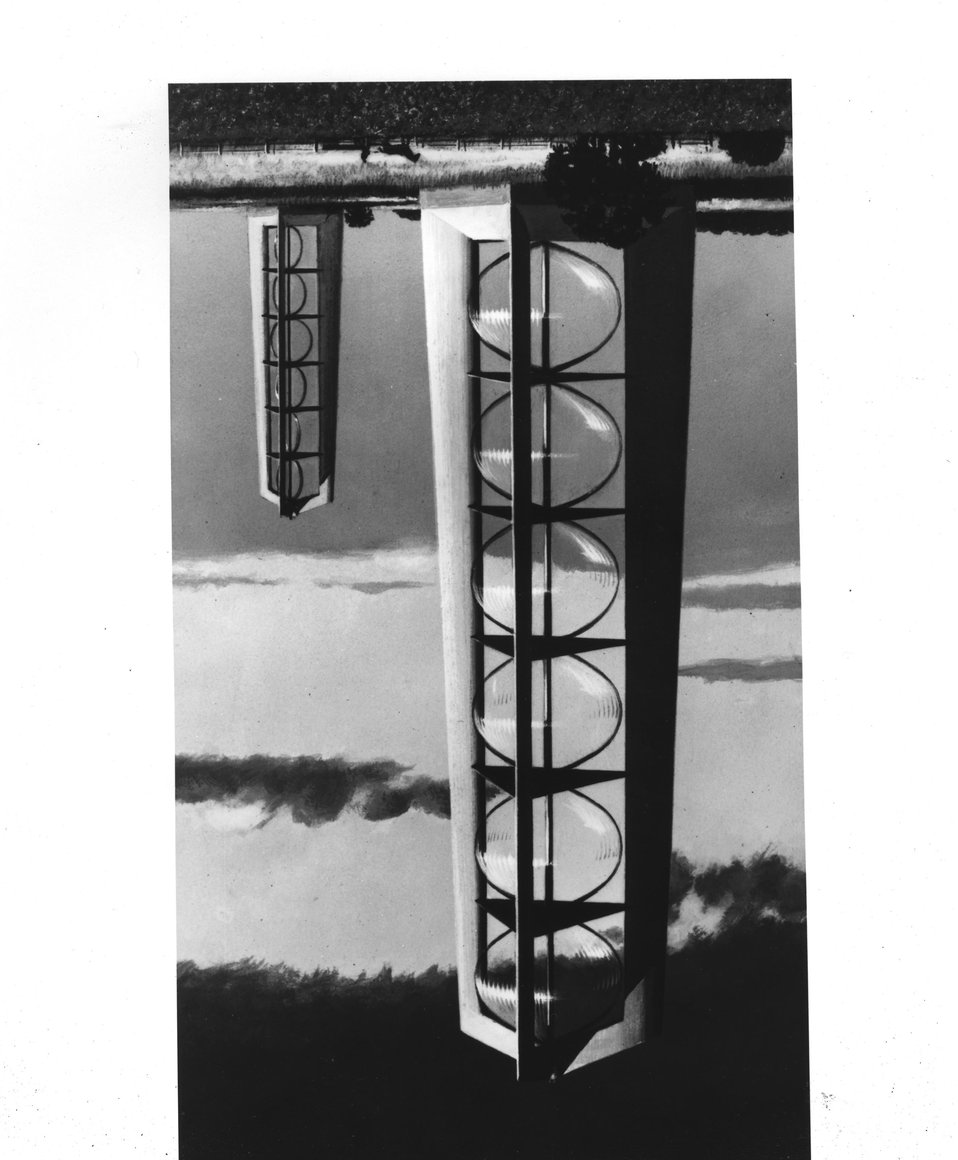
Nothing in the books says a windmill has to look like a windmill -- but that it must have a set of blades, something to kick them into action, and a hub to transmit the energy. c. undated